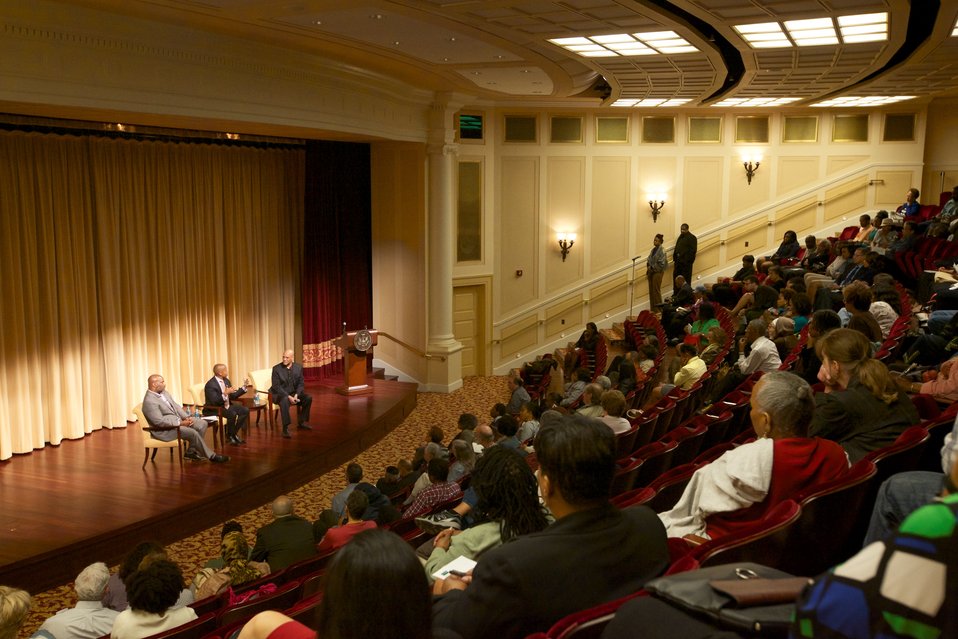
Solomon Northup's Odyssey